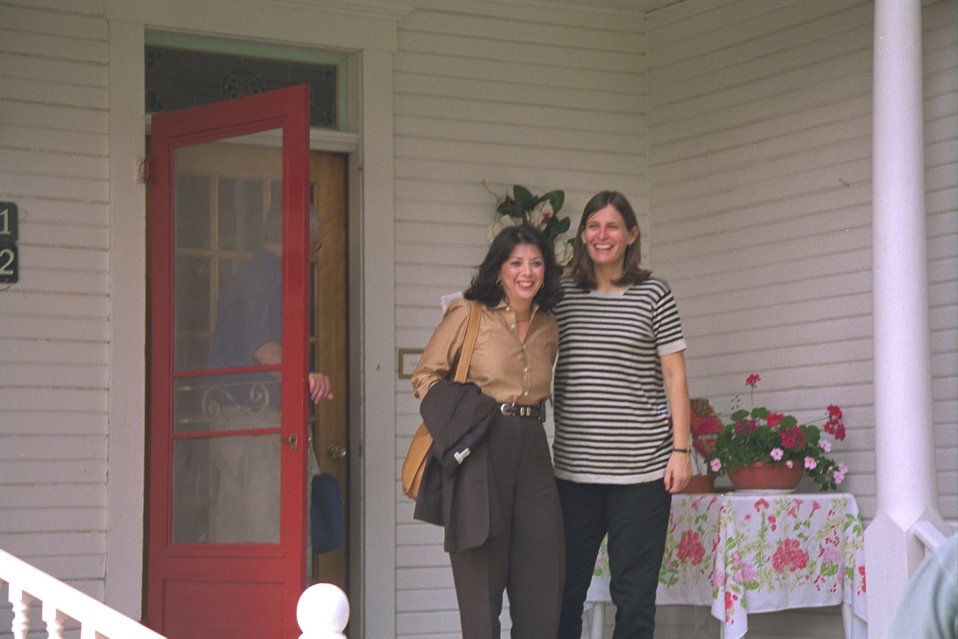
Sylvia Baca and Molly McUsic at the Sage Country Inn in Burns. The site of Secretary Babbitt's meeting on the Steens designation.